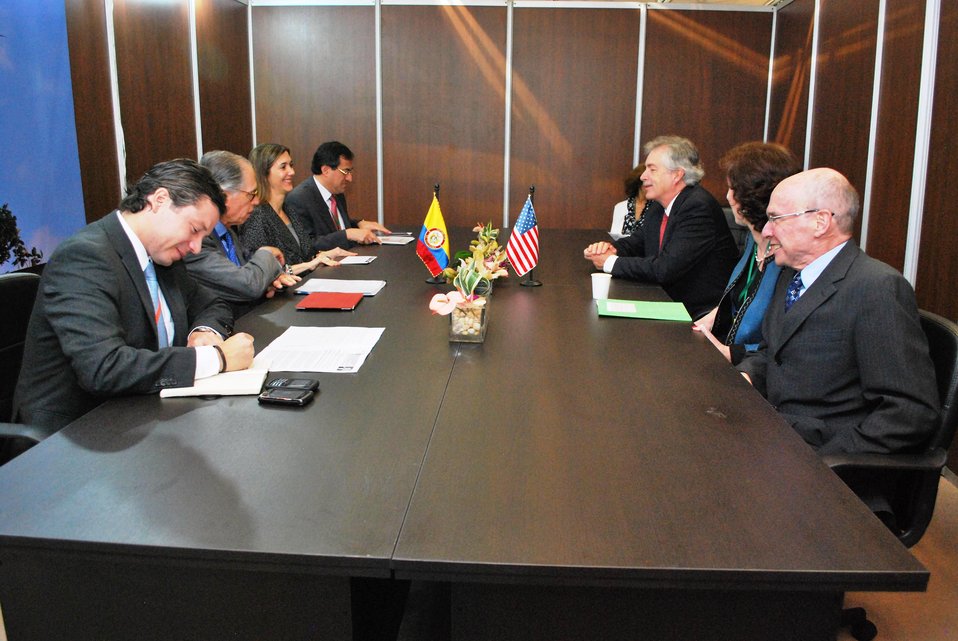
Deputy Secretary Burns and Assistant Secretary Jacobson Meet With Colombian Vice Foreign Minister Londono

Deputy Secretary of State William Burns and Assistant Secretary of State for Western Hemisphere Affairs Roberta Jacobson meet with Colombian Vice Foreign Minister Patti Londono on the sidelines of the Pathways to Prosperity in the Americas ministerial in Cali, Colombia, October 23, 2012.